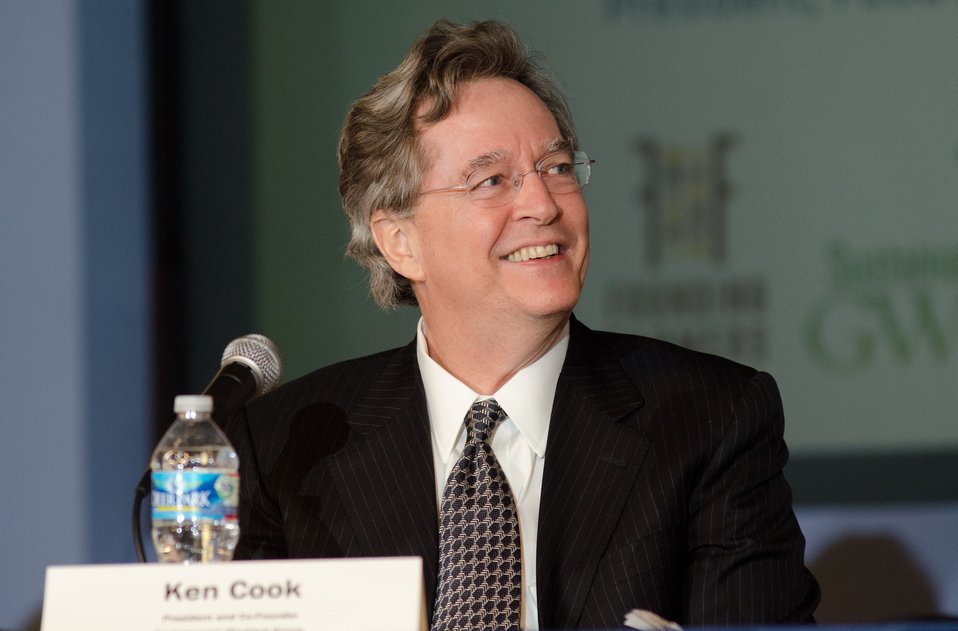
Environmental Working Group President and Co-Founder Ken Cook, before a question and answer session, during the “Shaping the Farm Bill for a Sustainable Future” Forum in the Jack Morton Auditorium, at the Trachtenberg School of Public Policy and Public Administration, on the George Washington University campus in Washington, D.C., on Thursday, March 1, 2012.